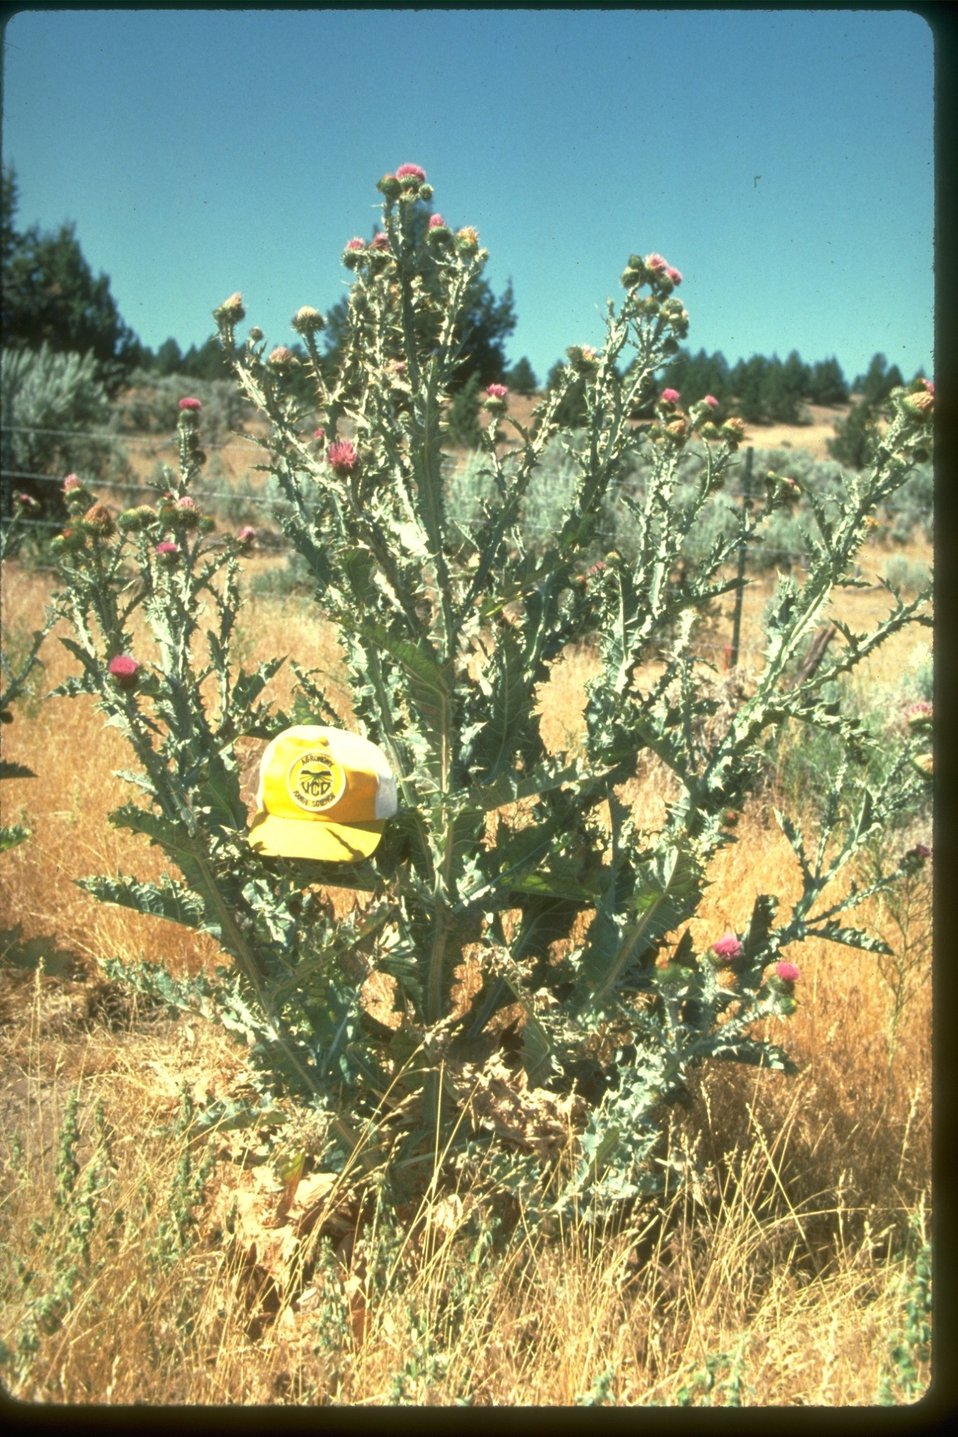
Scotch Thistle.